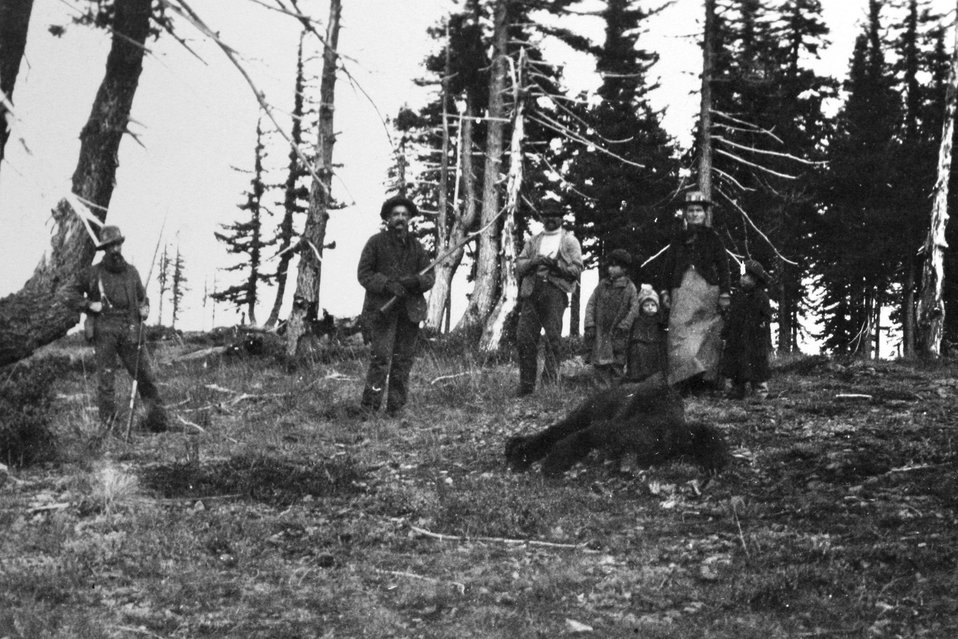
Hunting bear on Hardwater Ridge C. 1904. Tom Pollard, Abnego Pollard, George Billings, Ivin Billings, Annie Billings and Evered Billings.